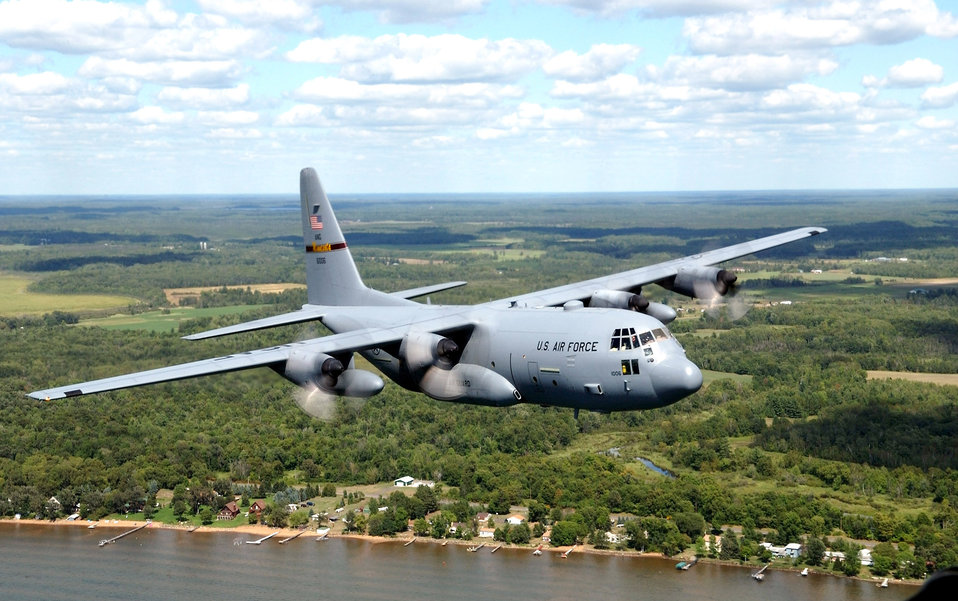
Soaring Hercules

A C-130 Hercules from the Minnesota Air National Guard's 133rd Airlift Wing flies over the shore of Mille Lacs Lake area in northern Minnesota during a training mission Aug. 20.